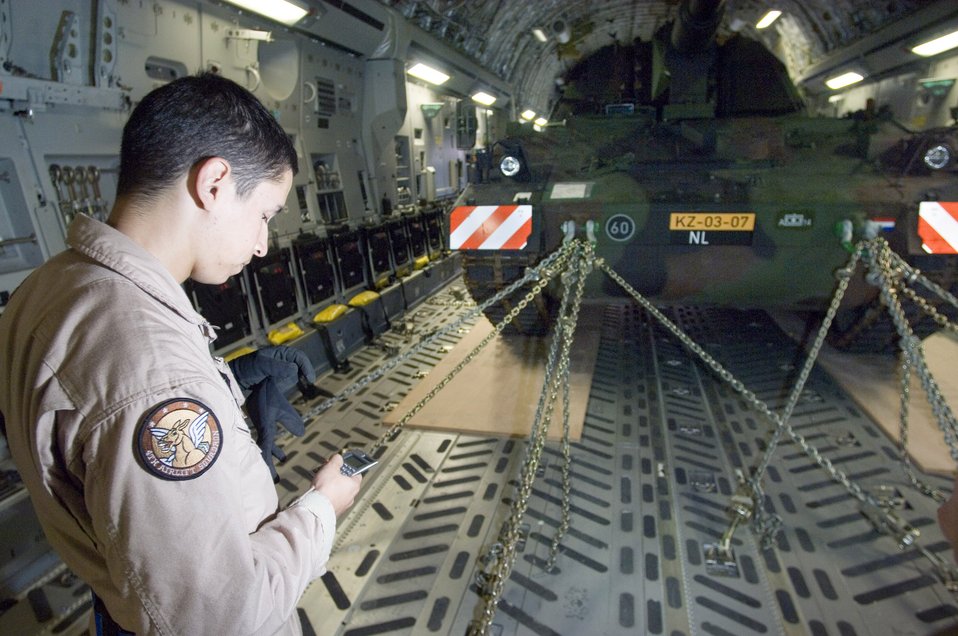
Howitzer takes flight

Airman 1st Class Joseph Ruiz calculates flight performance with a Netherlander Howitzer 2000 fastened to the floor of a C-17 Globemaster III at Ramstein Air Base, Germany, Sept. 6. Airman Ruiz is a loadmaster with the 4th Airlift Squadron at McChord Air Force Base, Wash.